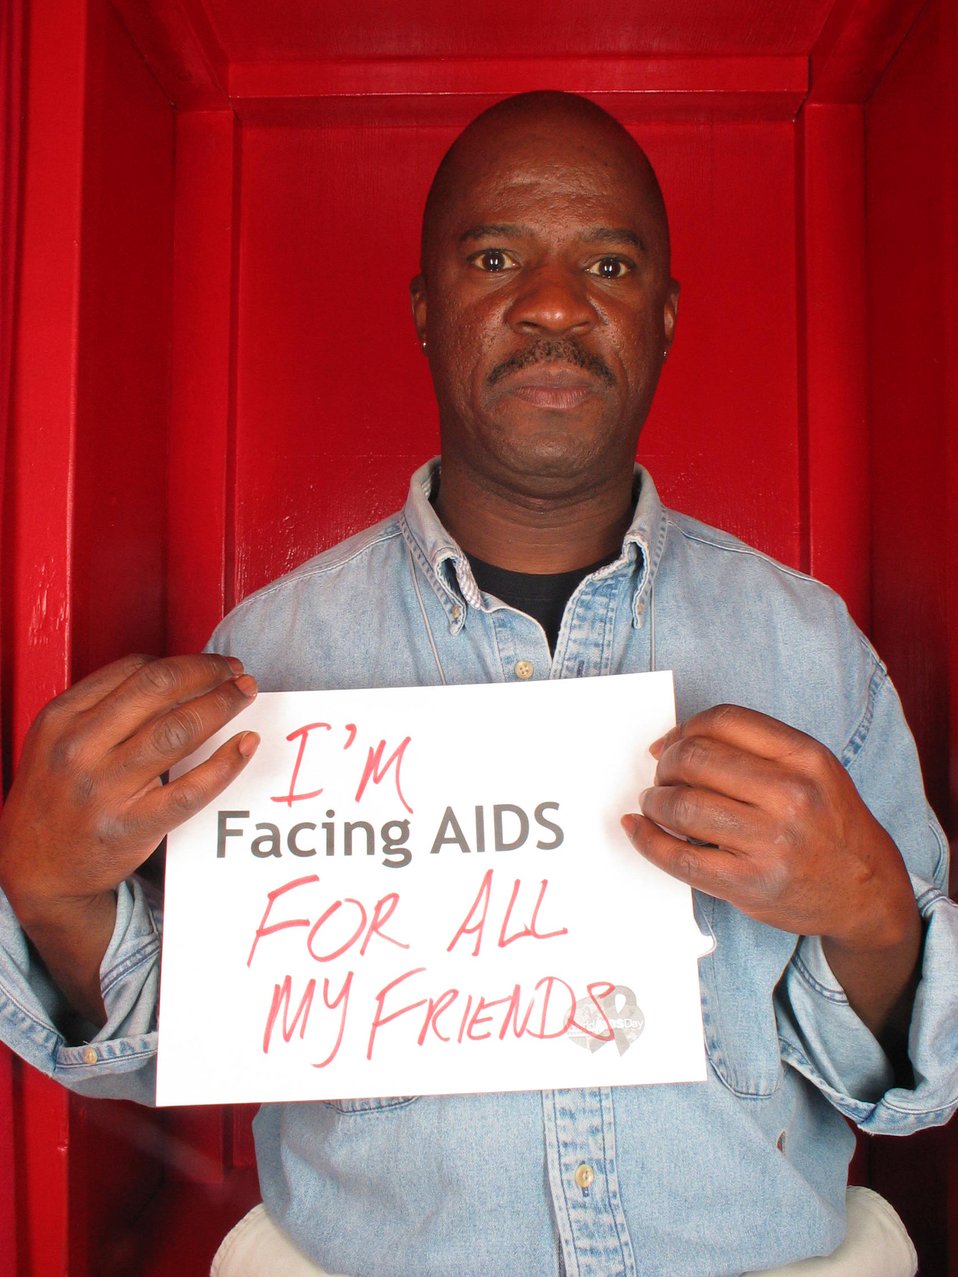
I'm Facing AIDS for all my friends